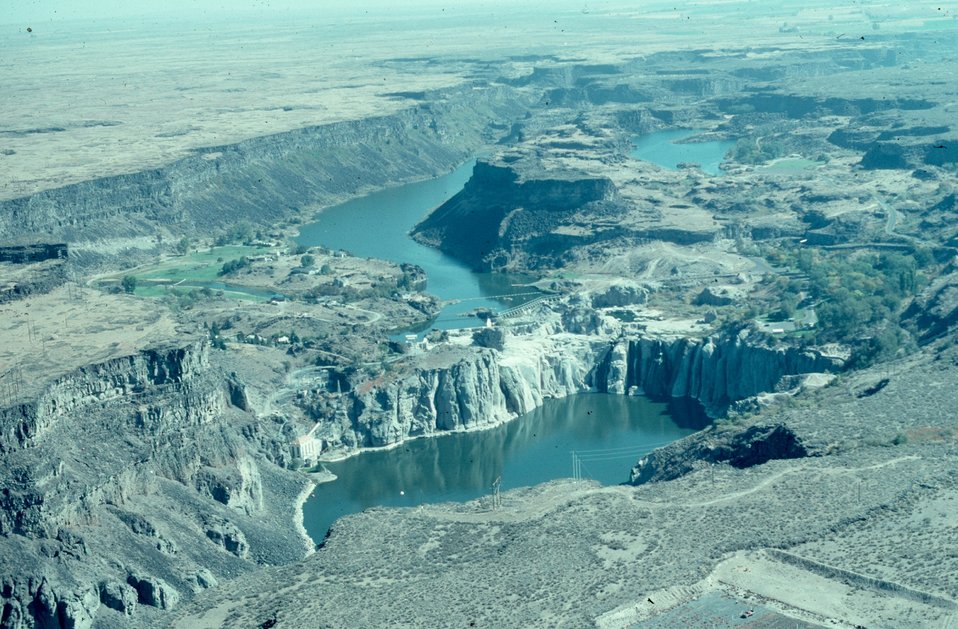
Overview of Shoshone Falls Shoshone Field Office USRD Upper Snake River District